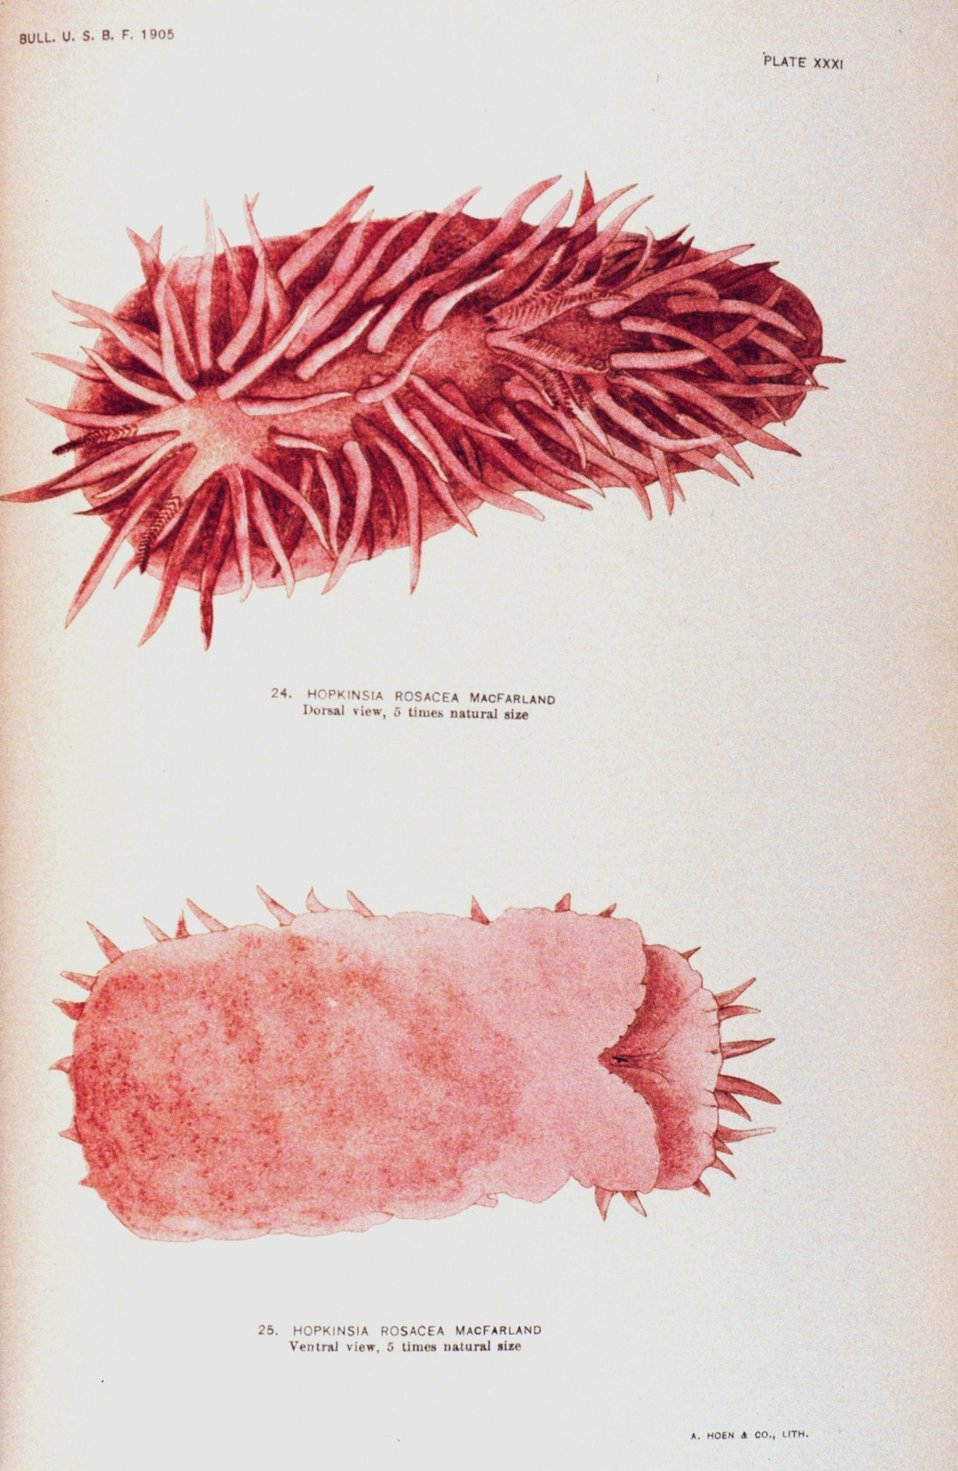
Nudibranch. 24 and 25. Hopkinsia rosacea MacFarland - dorsal and lateral views . Views painted by Anna B. Nash of the Hopkins Seaside Laboratory. In: 'Opisthobranchiate Mollusca from Monterey Bay ....', Bulletin of the Bureau of Fisheries, Volume 25, 1905. P. 151, Plate XXXI.